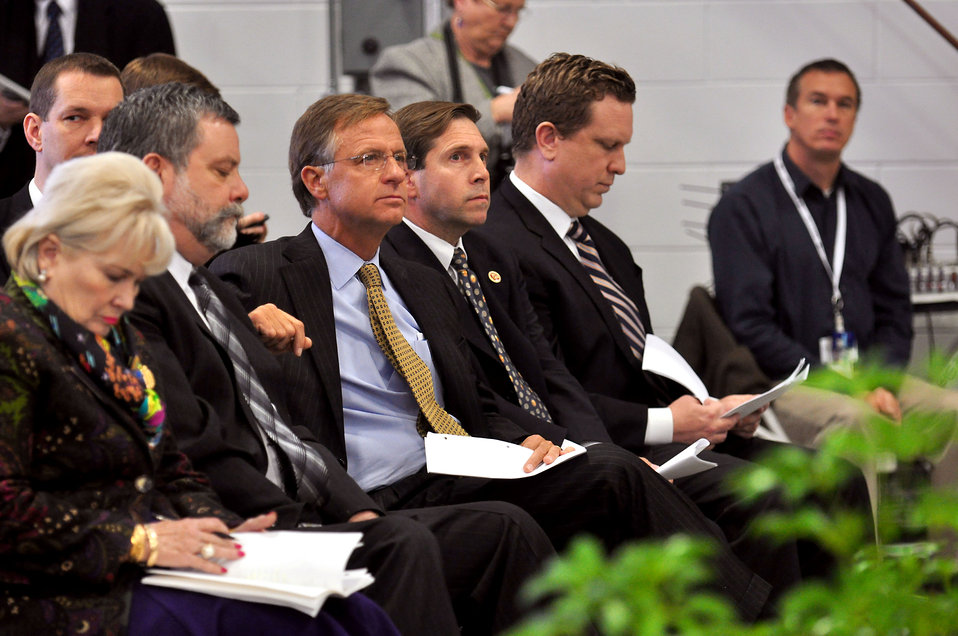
Carbon Fiber Technology Facilty Open House Oak Ridge Tennessee

13-025 DOE photo Lynn Freeny